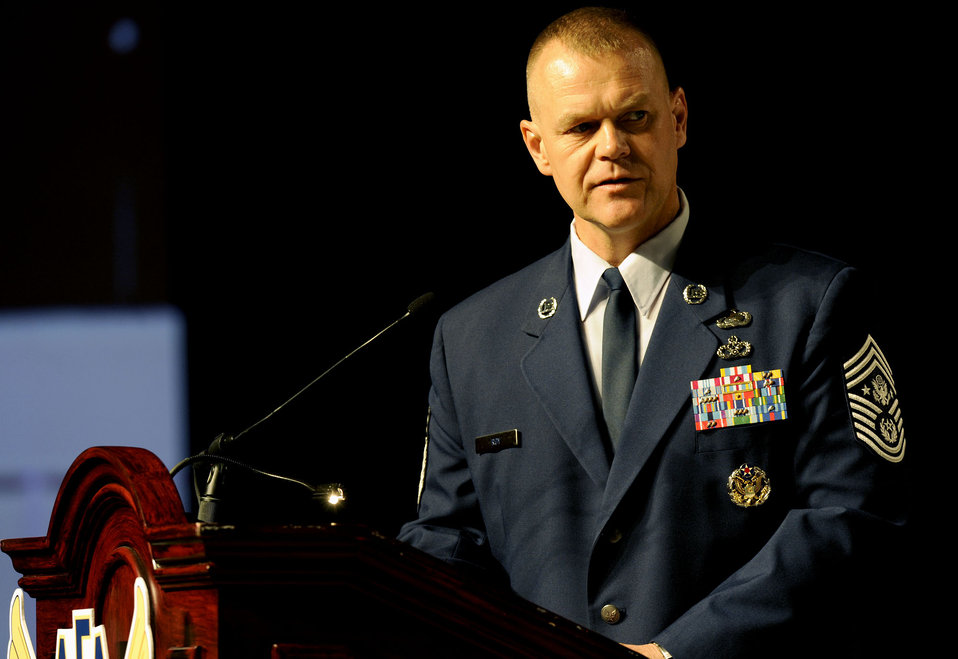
Command Chiefs Forum

Chief Master Sgt. of the Air Force James Roy leads a command chiefs' forum Sept. 13, 2010, during the Air Force Association's Air and Space Conference and Technology Exposition at National Harbor in Oxon Hill, Md. Five command chiefs answered questions including topics on fitness, resiliency among Airmen and their families and suicides.